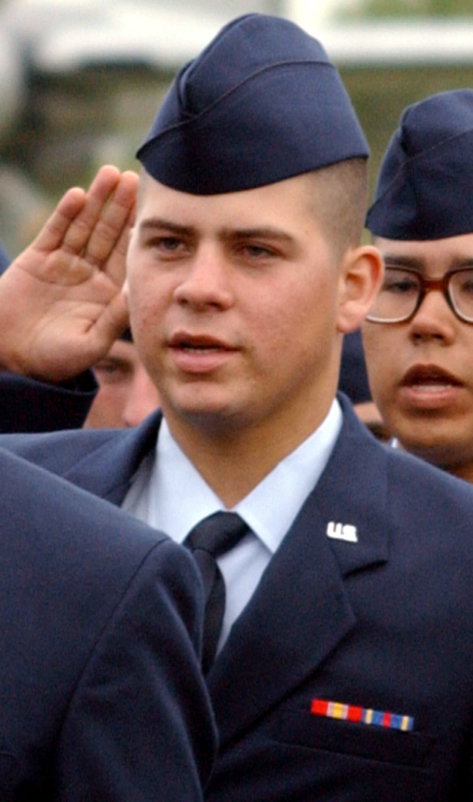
Call-to-service airmen graduate

LACKLAND AIR FORCE BASE, Texas -- Airman Hector Barreto graduates from Basic Military Training here Nov. 14. Barreto was the first person to enlist in the Air Force under the National Call to Service 15-month enlistment.